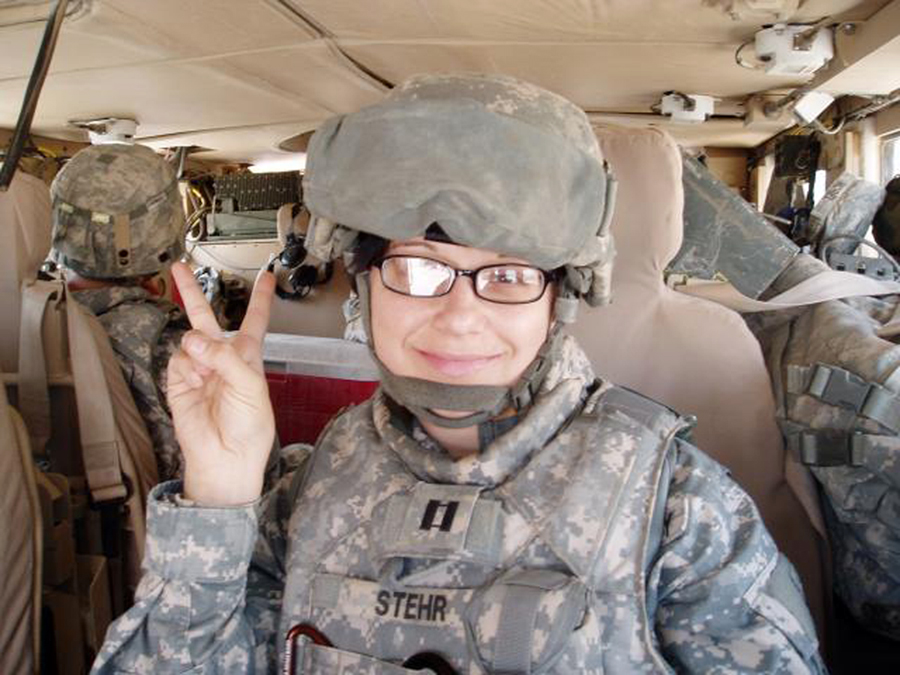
Soldier conquers suicidal thoughts, urges others to get help

Army Capt. Emily Stehr contemplated committing suicide after returning from Iraq. She now shares her story with others in the hope that they will see that reaching out for help not only is OK, but also makes the person a better Soldier.